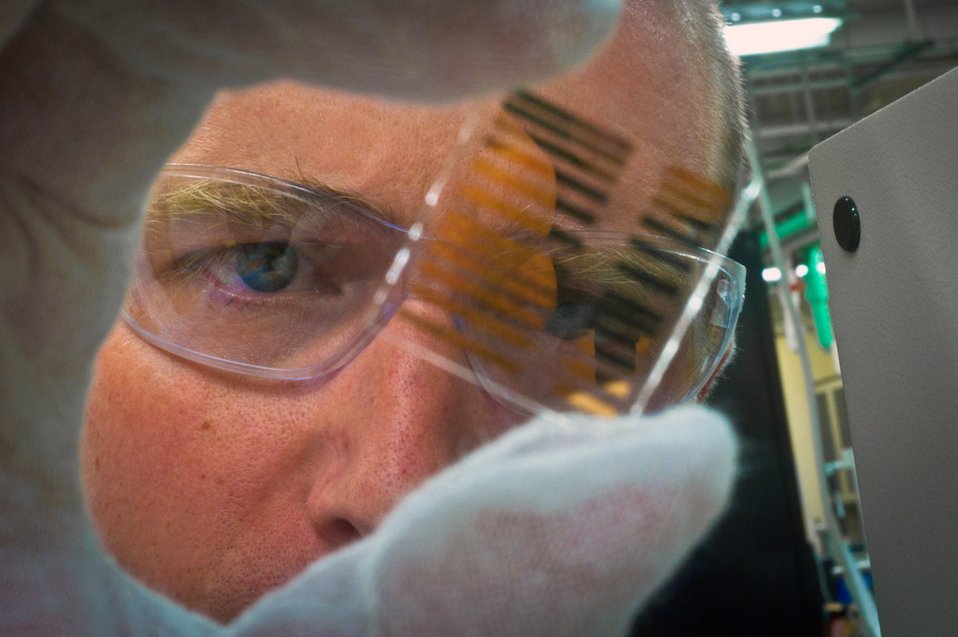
Robert Tenent

NREL Senior Scientist Robert Tenent working on a small sample of thin film lithium-ion conductors in the molecular layer deposition lab.